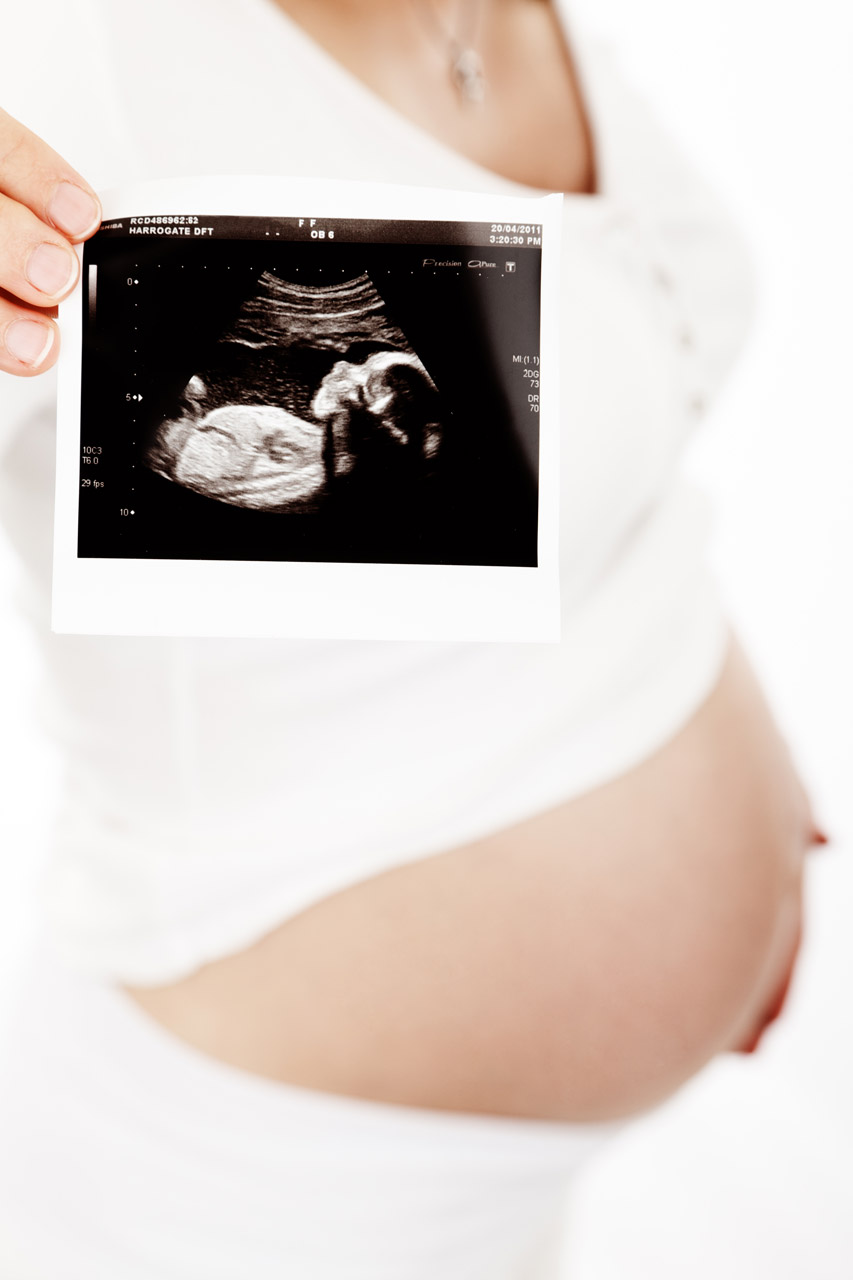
Ultrasound and belly

Pregnant woman holding an ultrasound picture with a belly in the background.